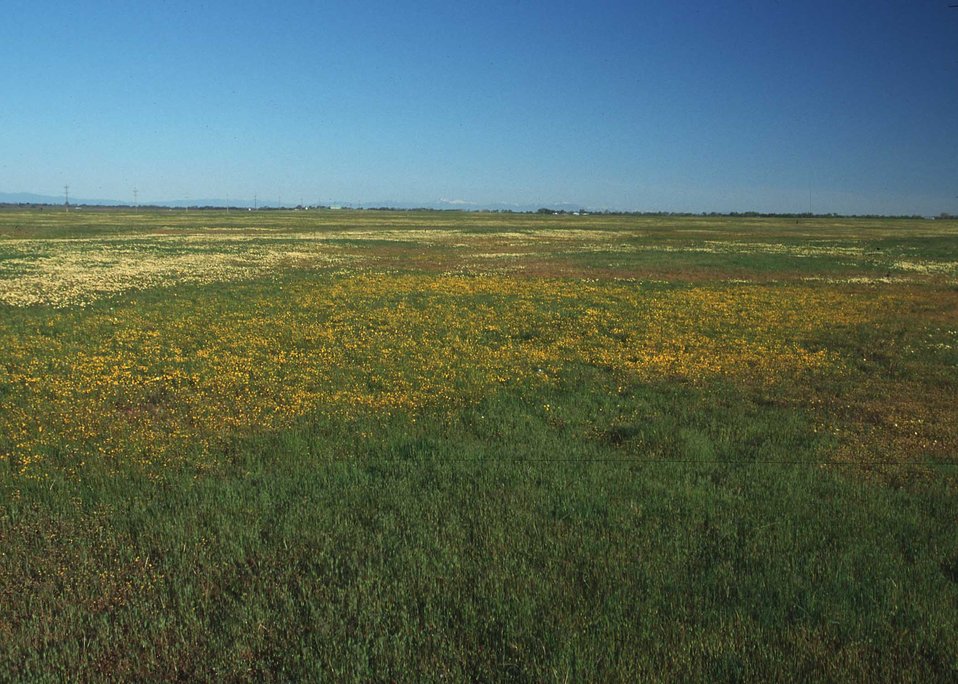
Vernal pool in northern California.